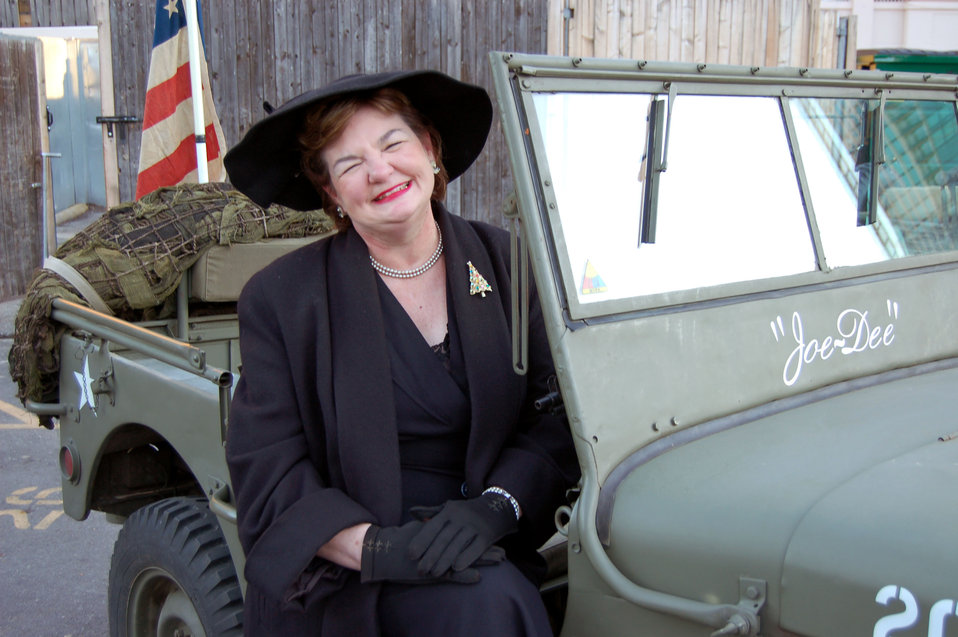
Pep rally heightens excitement for Bell Helicopter Armed Forces Bowl

Dee Bash sits in an authentic World War II jeep on display at the Bell Helicopter Armed Forces Bowl Pep Rally at Sundance Square in Fort Worth, Texas, Dec. 22. Ms. Bash is with the Military Vehicle Preservation Association, a living history organization.